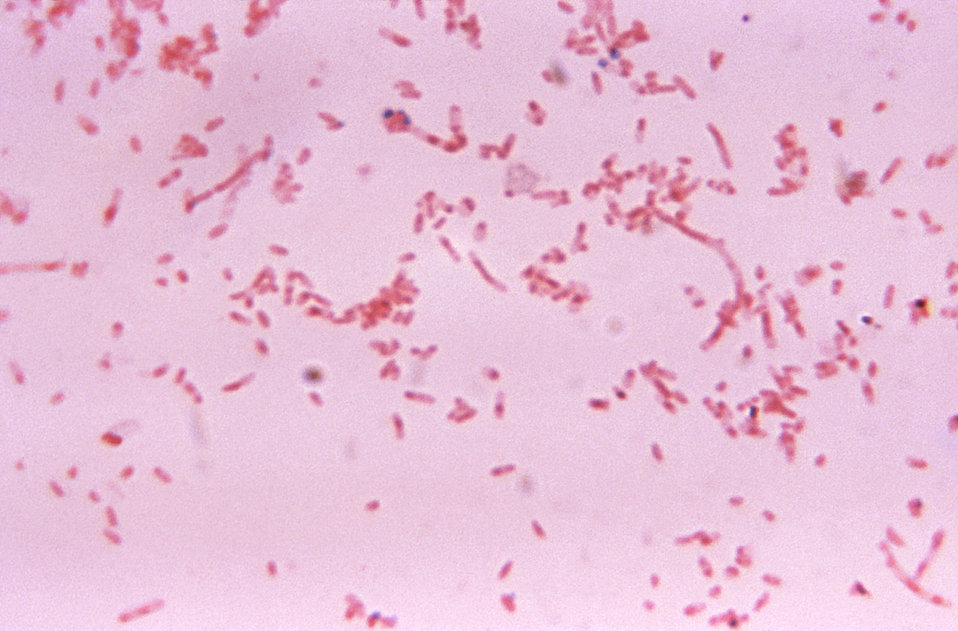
This photomicrograph shows Fusobacterium novum after being cultured in a thioglycollate medium for 48 hours.